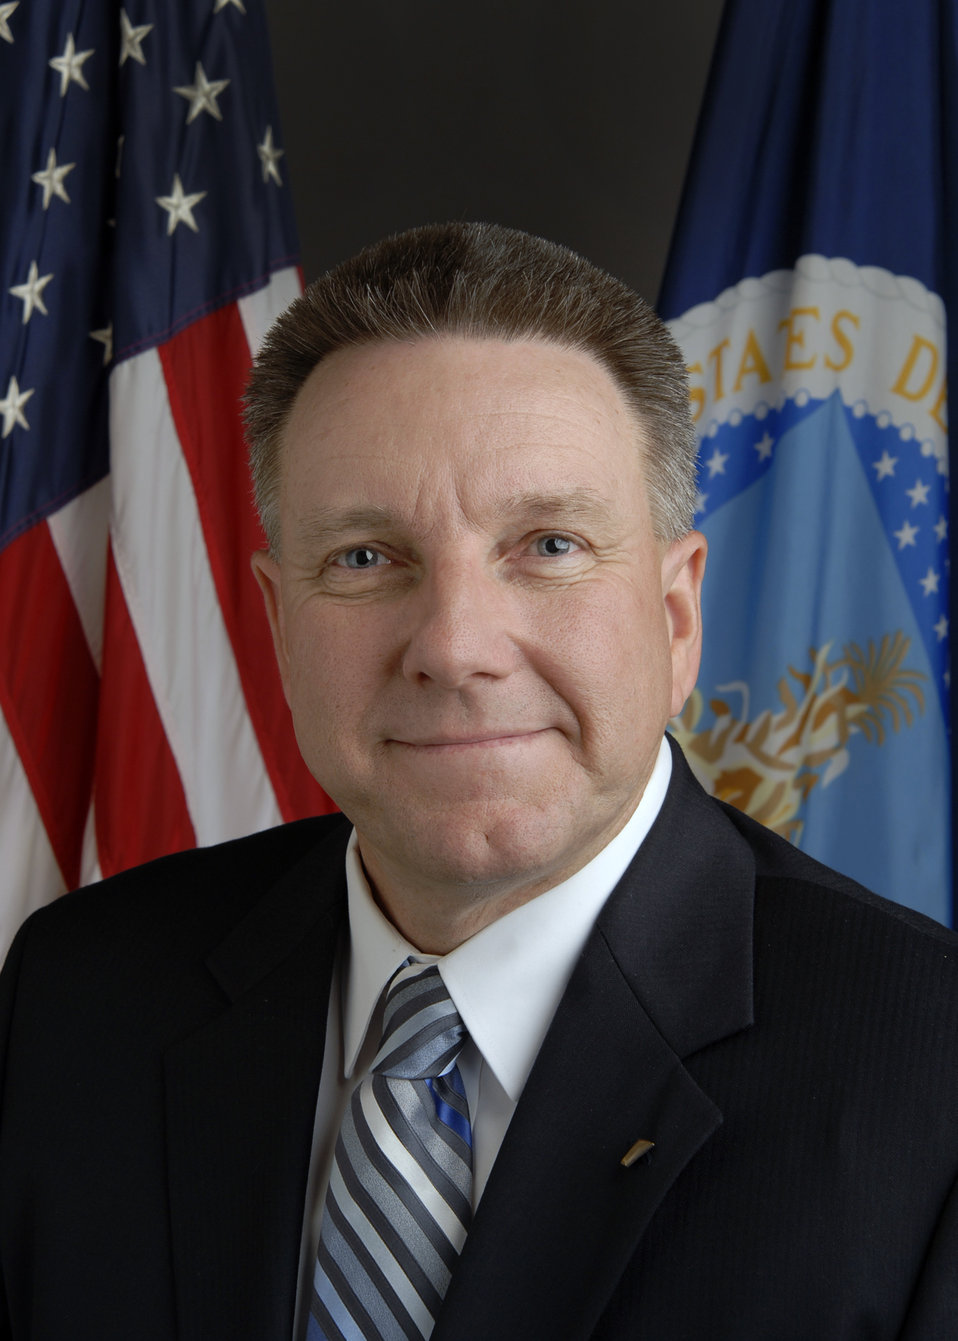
20120724-FSA-KJH-2669 Acting Deputy Administrator of FSA Farm Programs Craig Trimm

Acting Deputy Administrator of FSA Farm Programs Craig Trimm.